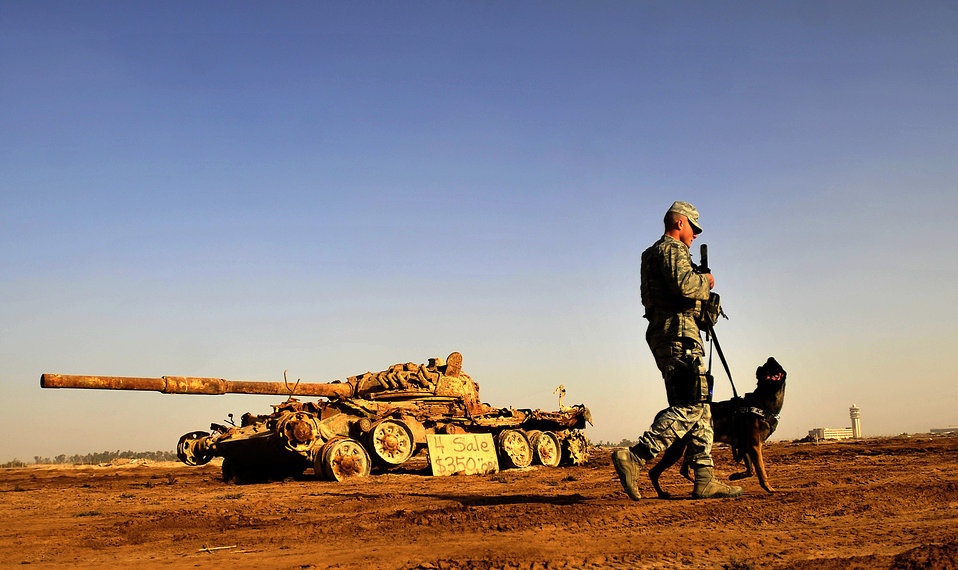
Airman's best friend

Senior Airman Stephen Hanks and Geri, a patrol and explosive detector dog with the 447th Expeditionary Security Forces Squadron, patrol the perimeter of Sather Air Base Dec. 11, 2011, in Baghdad, Iraq. For the last six months, Geri and Hanks have been supporting Operation New Dawn by providing explosive and psychological deterrence. Hanks is a military working dog handler assigned to the 447th ESFS.